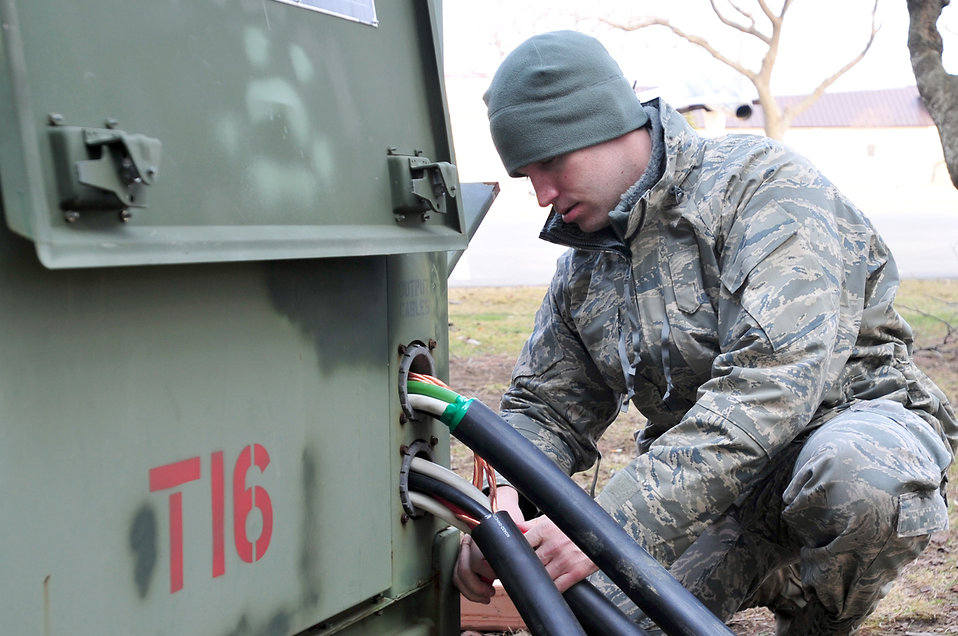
35th CES restore power

Airman 1st Class Aaron Cope wraps tape around exposed wires from a generator March 14, 2011, at Misawa Air Base, Japan. 35th Civil Engineer Squadron officials at Misawa ABissued a request for forces to assist with recovery operations. Airman Cope is assigned to the 18th Civil Engineer Squadron at Kadena Air Base, Japan.